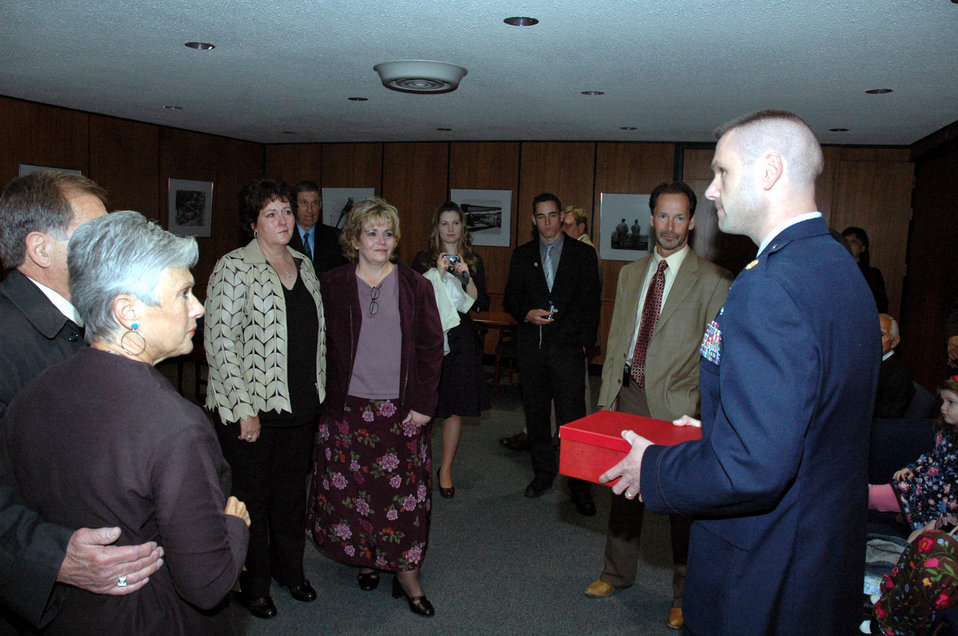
POW/MIA bracelet presented to family

Maj. Phil Heseltine presents the prisoner of war/missing in action bracelet he wore for 18 years to the family of Maj. Robert F. Woods, whose name is on the bracelet, during the funeral for Major Woods April 9 at Arlington National Cemetery in Virginia. Major Heseltine is the executive officer for the Air Force Expeditionary Center commander at Fort Dix, N.J.